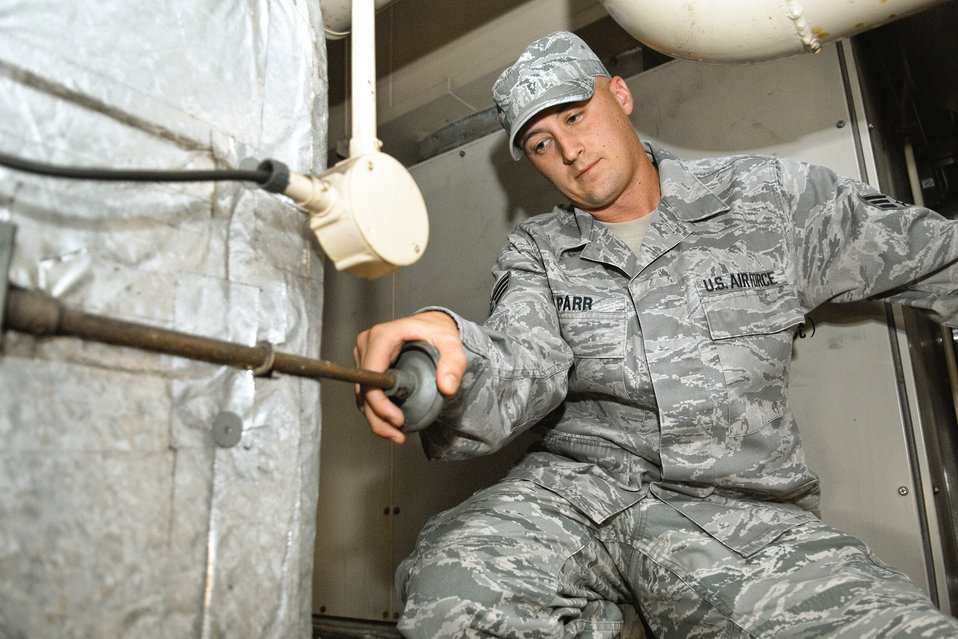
We make Yokota warm

Senior Airman David Parr checks the flow in a heating valve before operating the system Oct. 14, 2010 at Yokota Air Base. Airman Parr is a heating, ventilation and air conditioning technician with the 374th Civil Engineer Squadron.